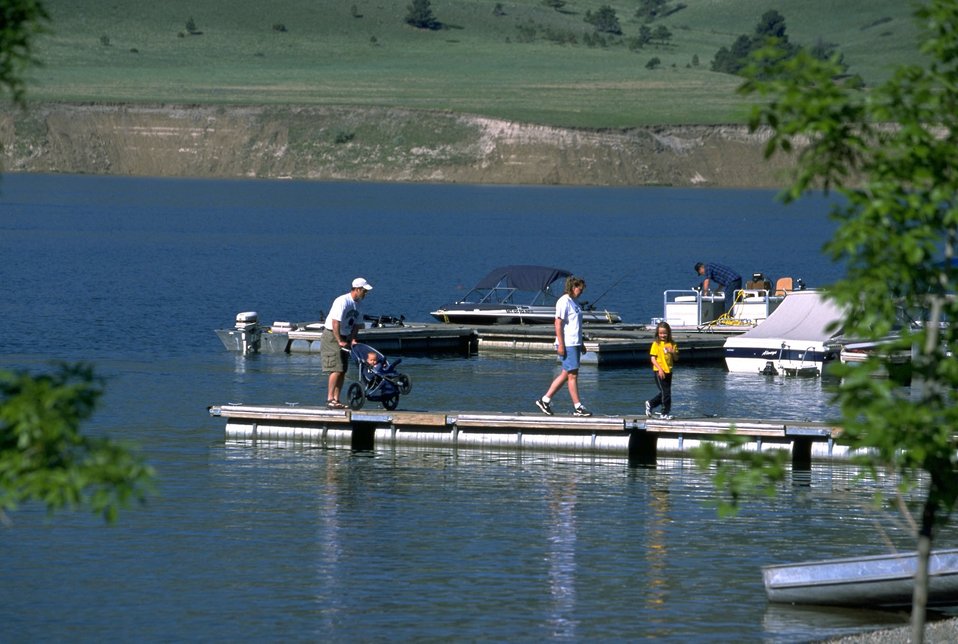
Family at the marina at Log Gulch Campground